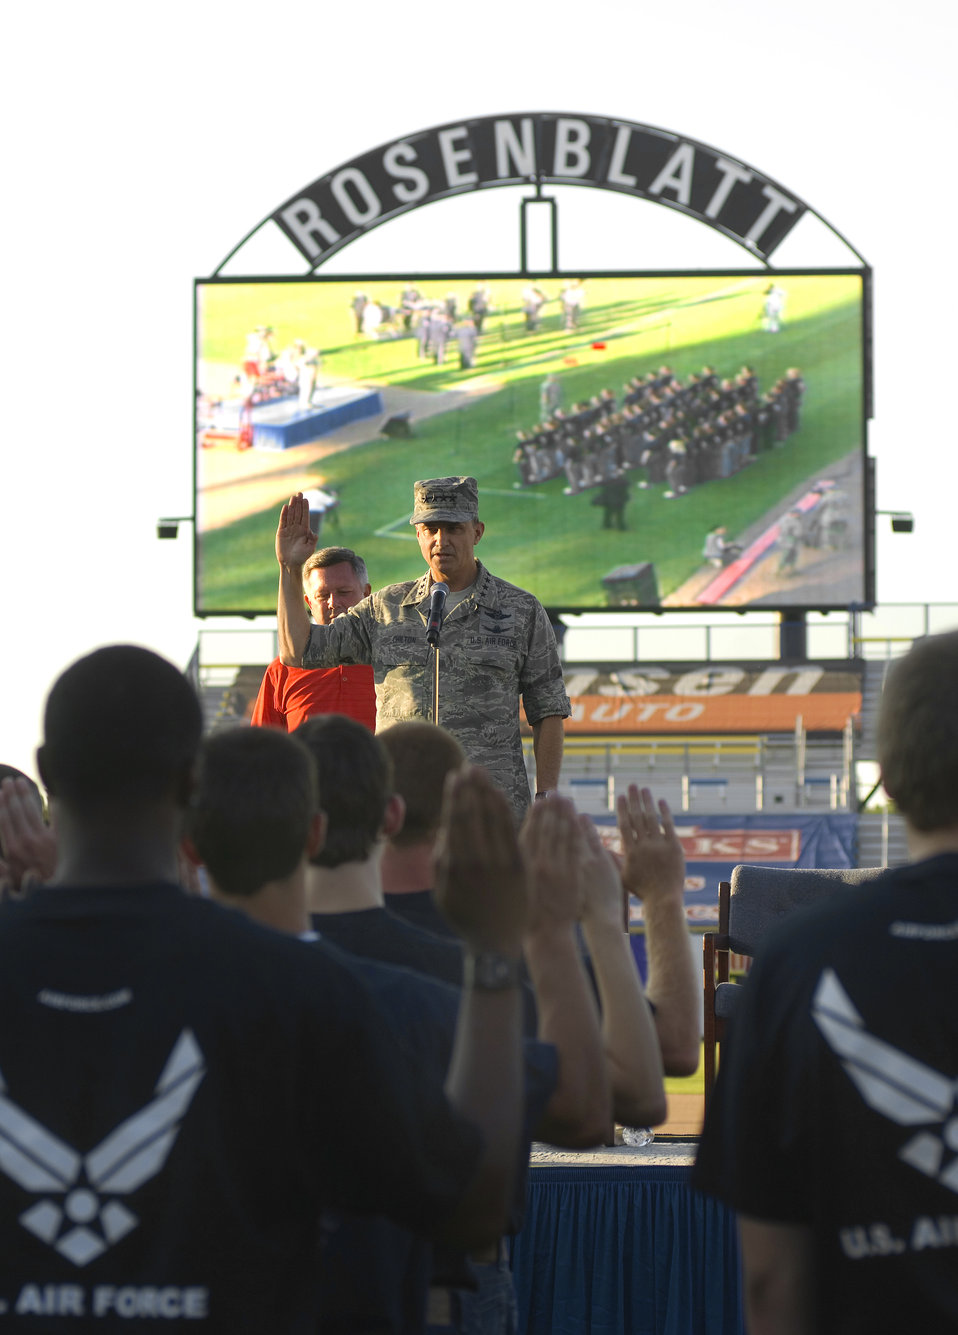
Air Force Week in the Heartland kicks off with a bang

Gen. Kevin P. Chilton administers the oath of enlistment to approximately 50 new recruits during a proclamation ceremony as part of Air Force Week in the Heartland Aug. 9 at Rosenblatt Stadium in Omaha, Neb. The week is designed to broaden awareness of the Air Force's role in the war on terrorism and strengthen support for Airmen serving worldwide in defense of freedom. General Chilton is the commander of U.S. Strategic Command at Offutt Air Force Base, Neb.